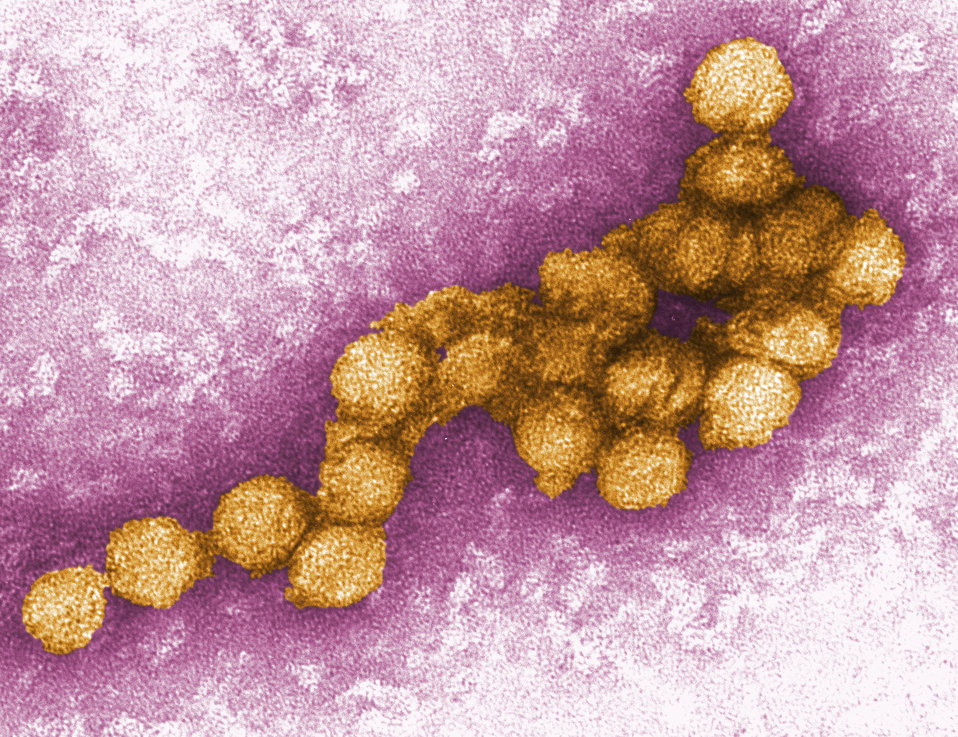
This is a digitally-colorized transmission electron micrograph (TEM) of the West Nile virus (WNV). See PHIL 2290 for a black and white version of this image.